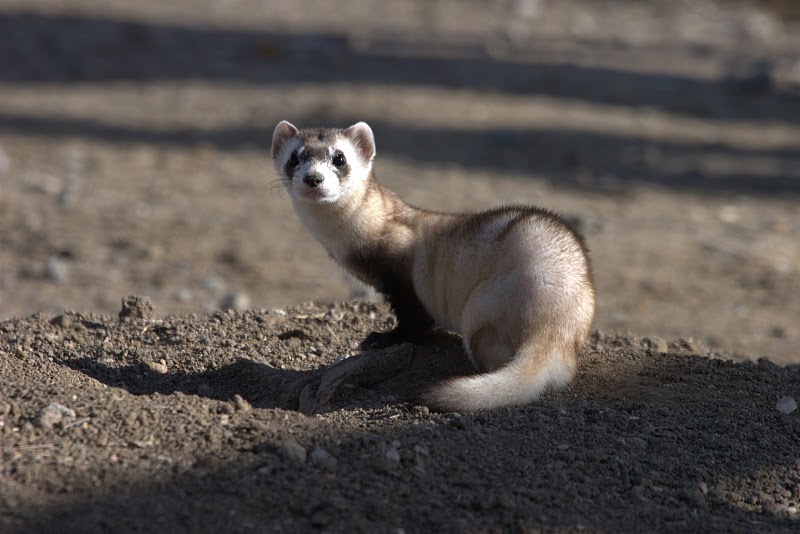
Black-footed Ferret